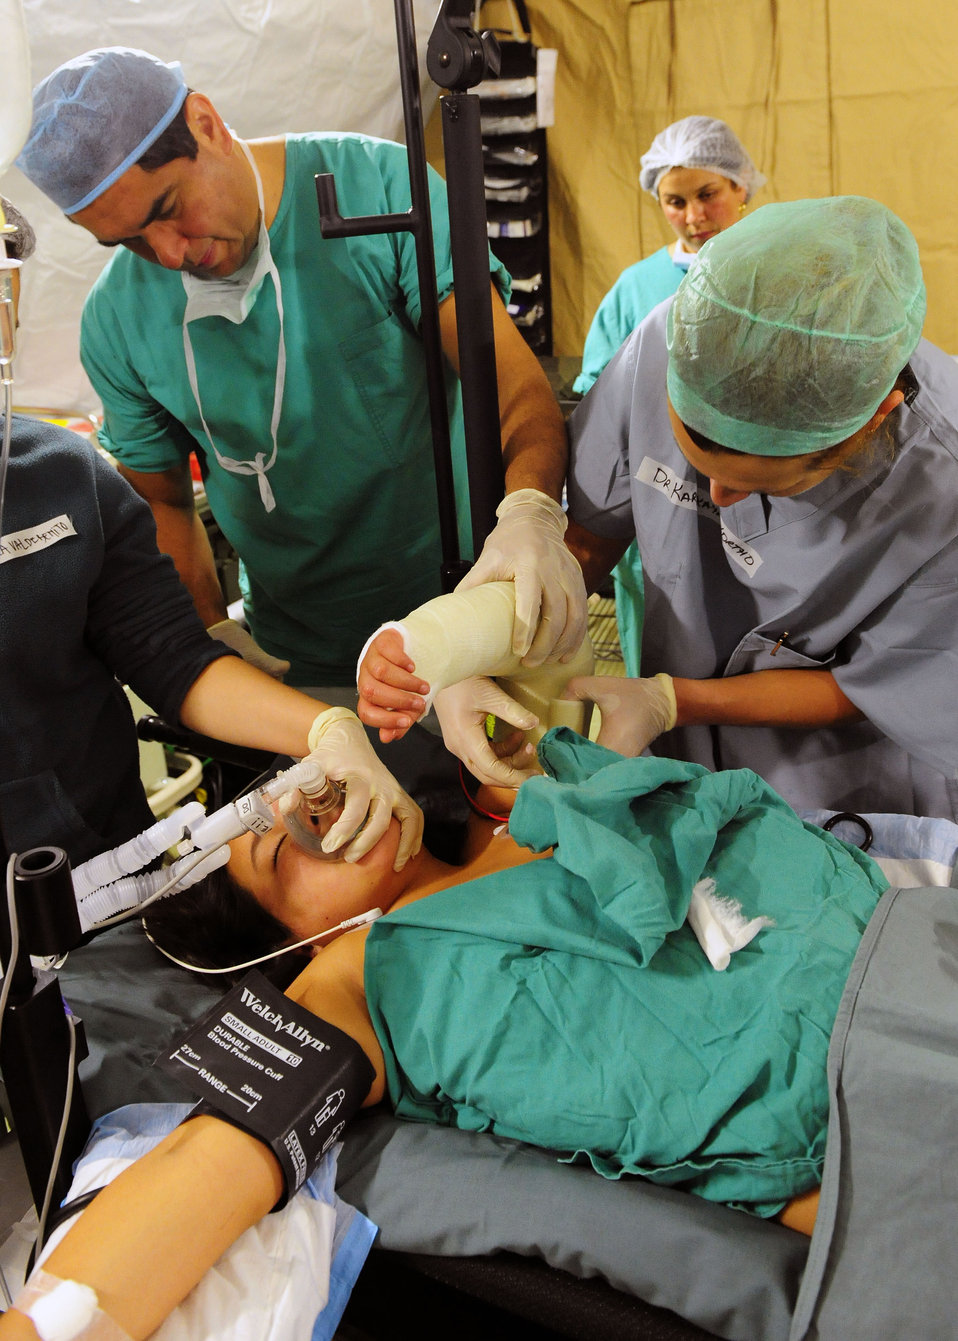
Airman cares for Chilean child

A Chilean surgeon (left) and Maj. Yekaterina Karpitskaya (right) work side-by-side to cast a Chilean child?s broken arm at the expeditionary hospital March 19, 2010, in Angol, Chile. While the local hospital in Angol is being rebuilt, this medical facility will provide much needed space to provide medical care for the local community. The hospital includes several tents for care, including an emergency room and two operating rooms. Major Karpitskaya is an orthopedic surgeon assigned to the 81st Medical Surgical Squadron at Keesler Air Force Base, Miss.